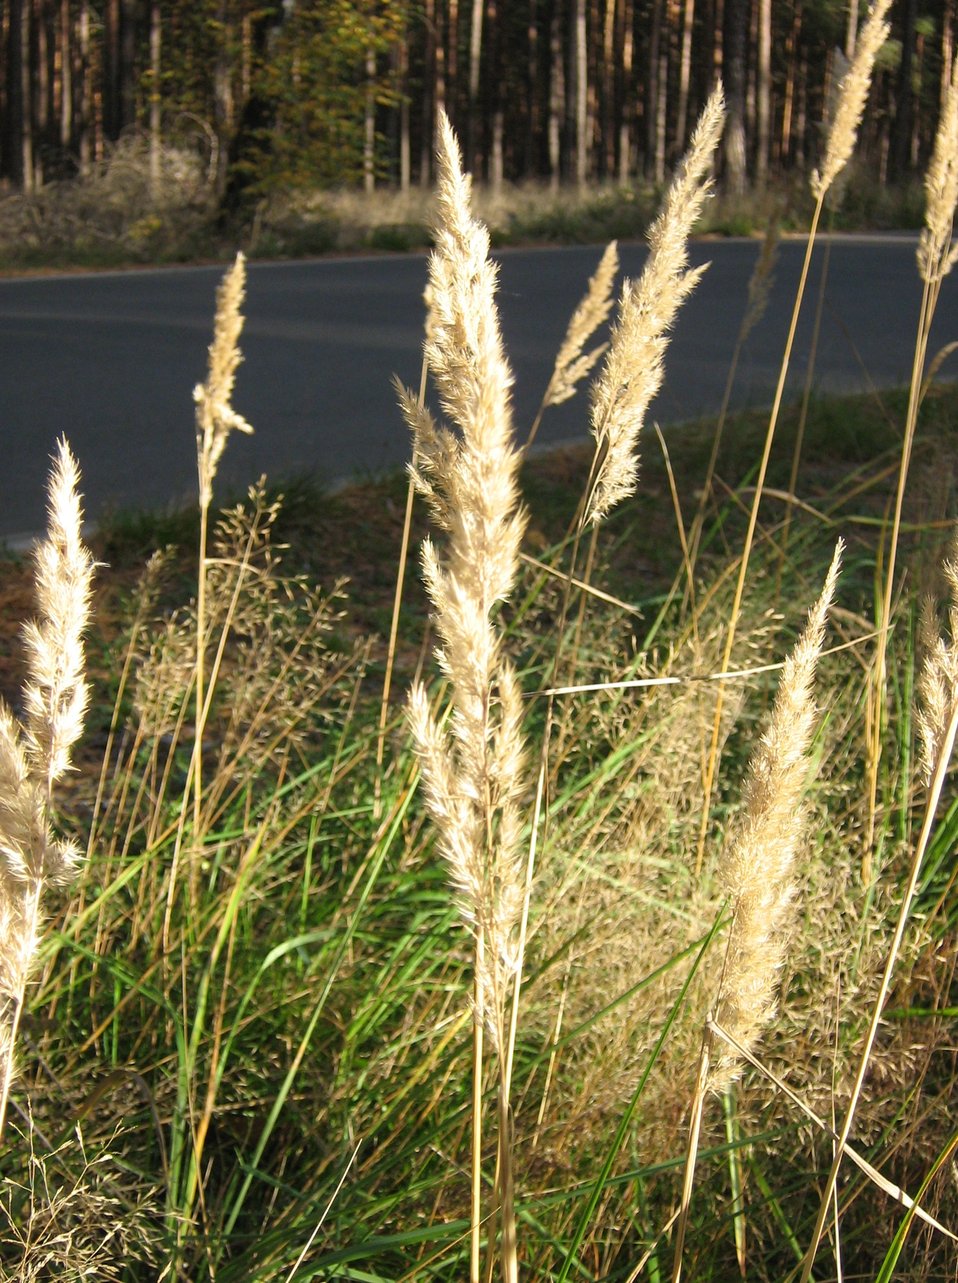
Calamagrostis epigejos Deutsch: Landreitgras